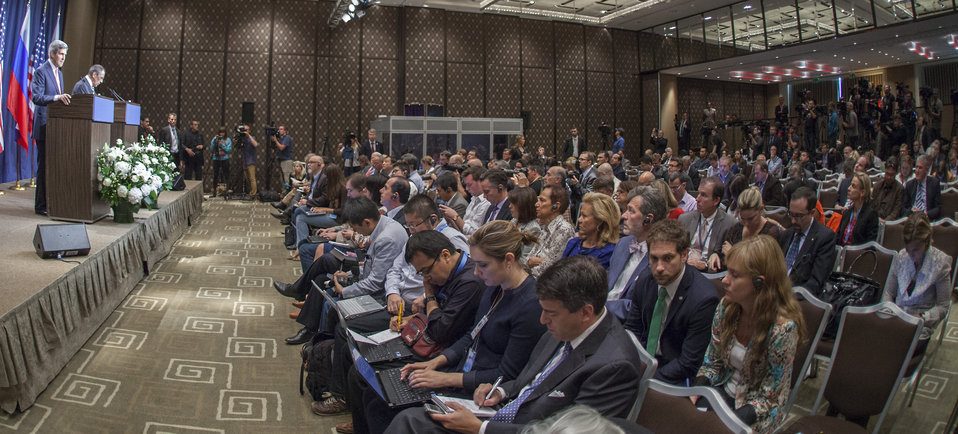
Secretary Kerry and Foreign Minister Lavrov Speak to the Press

U.S. Secretary of State John Kerry and Russian Foreign Minister Sergey Lavrov hold a news conference after the two finalized a framework for the elimination for Syrian chemical weapons in Geneva, Switzerland, on September 14, 2013.